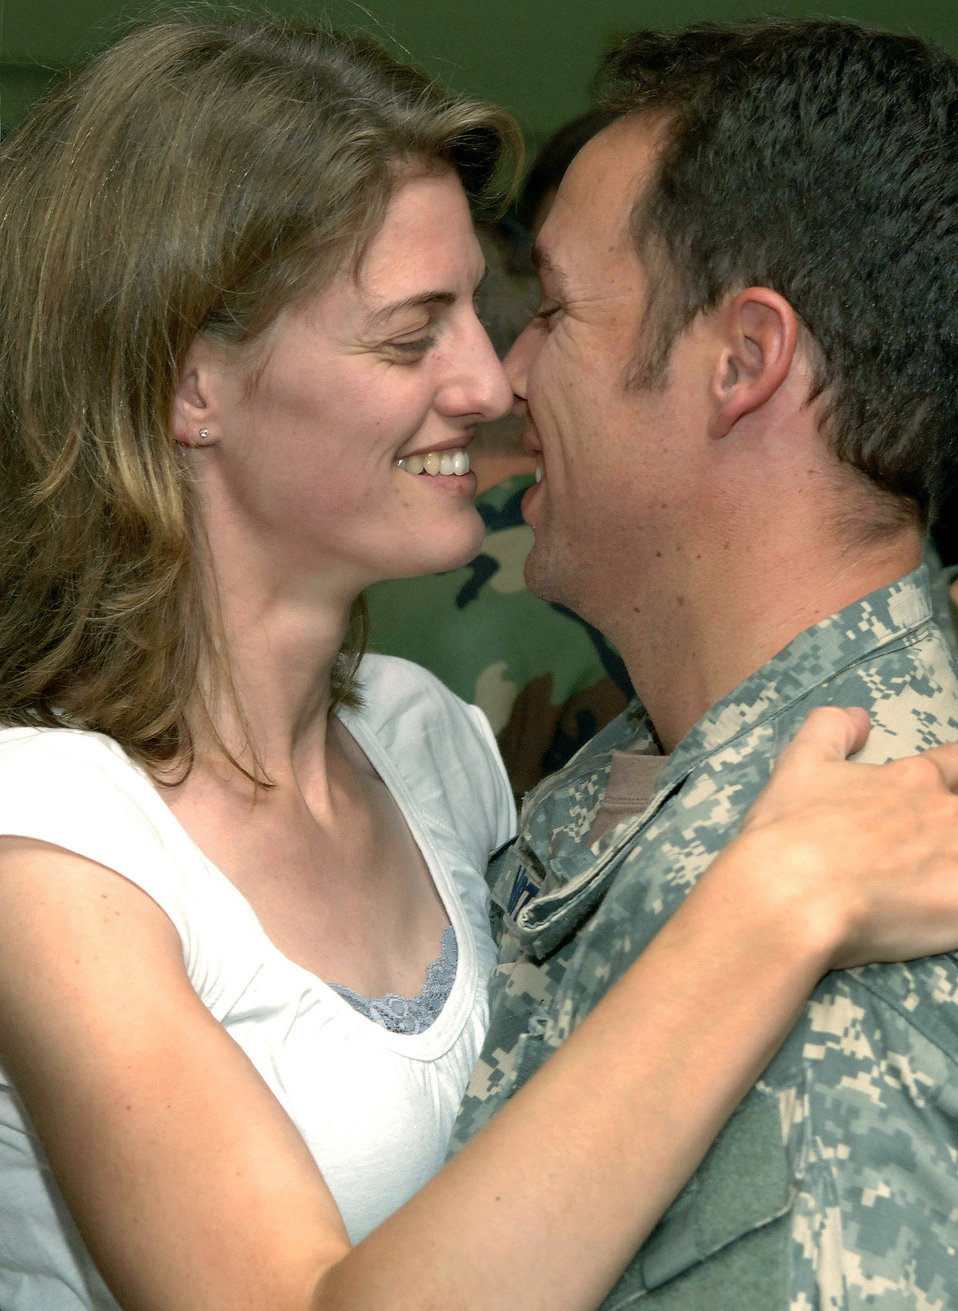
Airmen deployed with Army return home

Staff Sgt. Pete Wartena gets a warm welcome from his wife, Helga, upon his return June 5 to Fort Hood, Texas, following a six-month deployment to Iraq. Sergeant Wartena is assigned with the 3rd Air Support Operations Group at Fort Hood.